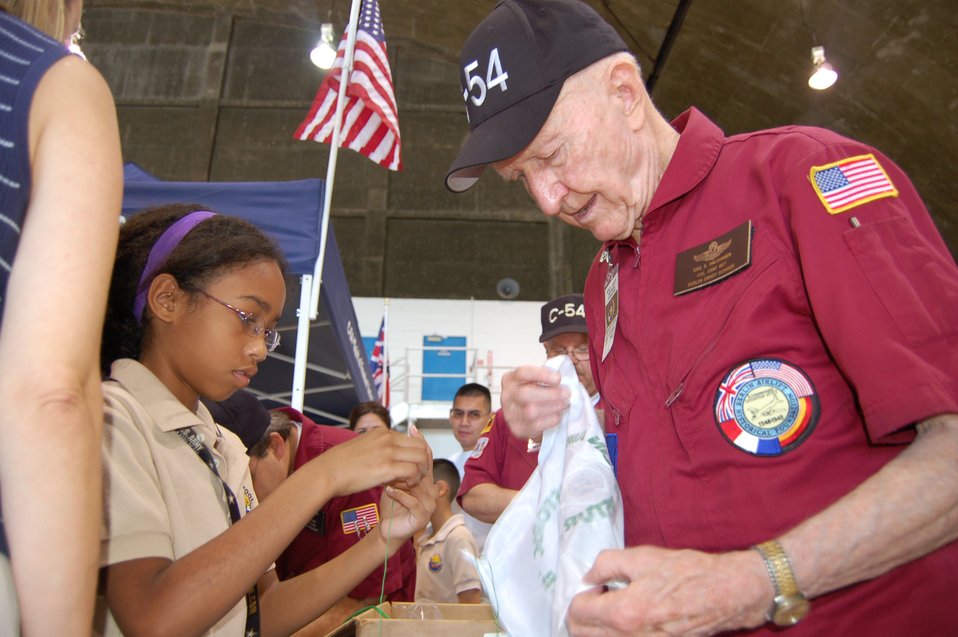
Visit

Allyssa Williams learns how to tie a handkerchief parachute to a candy bar from Retired Col. Gail Halvorsen March 22 at Coast Guard Air Station Borinquen, Puerto Rico. Colonel Halvorsen, also known as the Berlin Candy Bomber, flew C-54s during the Berlin Airlift and parachuted candy to children from his airplane. Allyssa, 9, is a Ramey School third grader. Coast Guard Air Station Borinquen is located at what used to be Ramey Air Force Base, which closed in 1973. Approximately 500 visitors got a firsthand look at today's military members and equipment in Puerto Rico, and to see an historic C-54 cargo plane used during the Berlin Airlift.